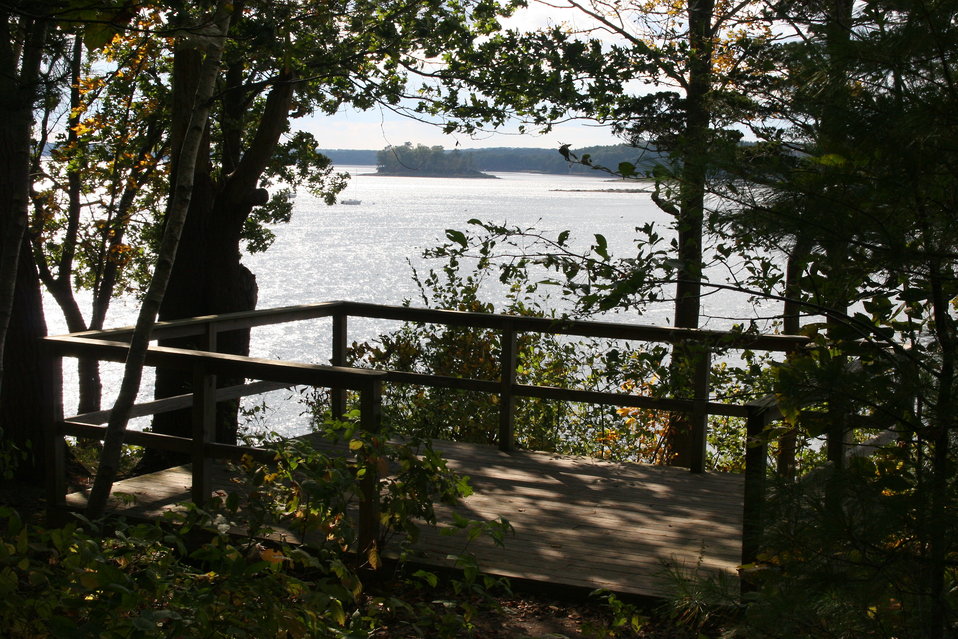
Wildlife viewing platform at Great Bay National Wildlife Refuge, Newington, NH.